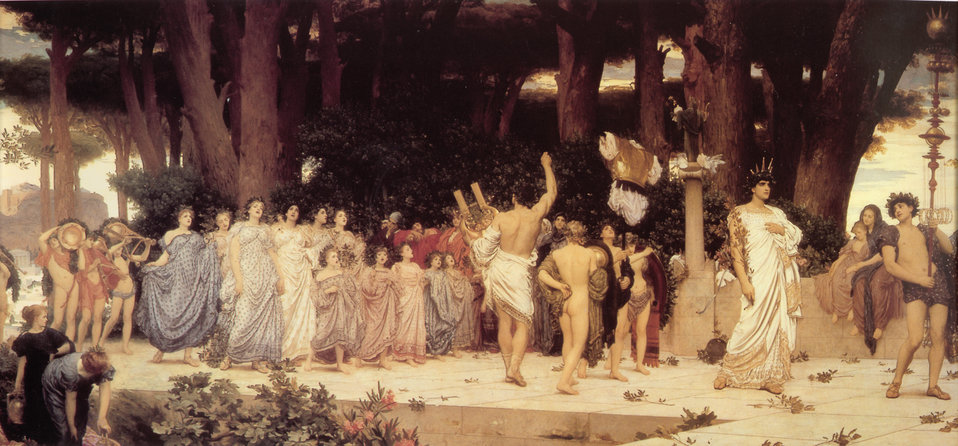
1876 Frederic Leighton - Daphnephoria